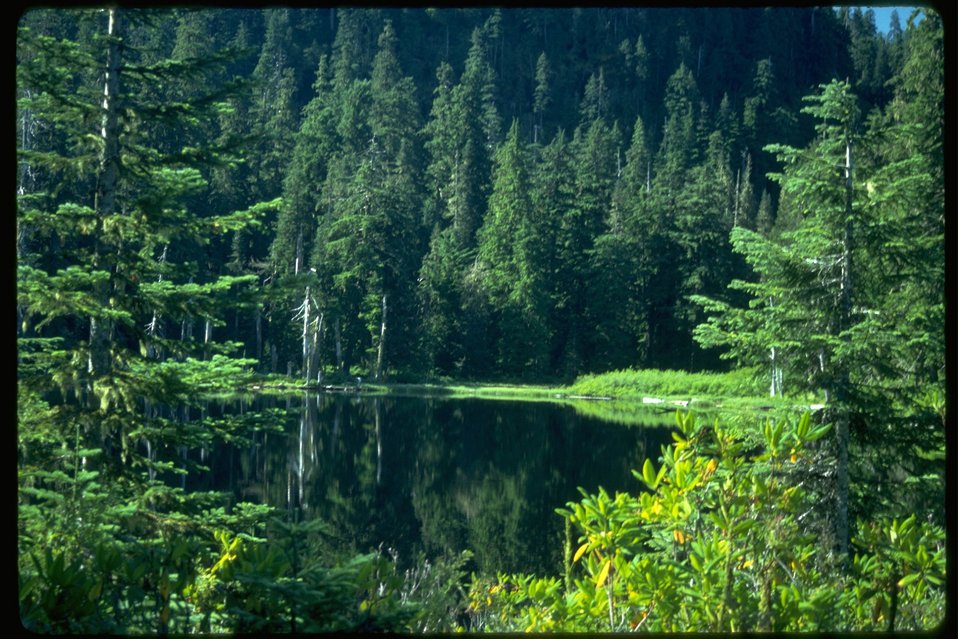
Crabtree Lake